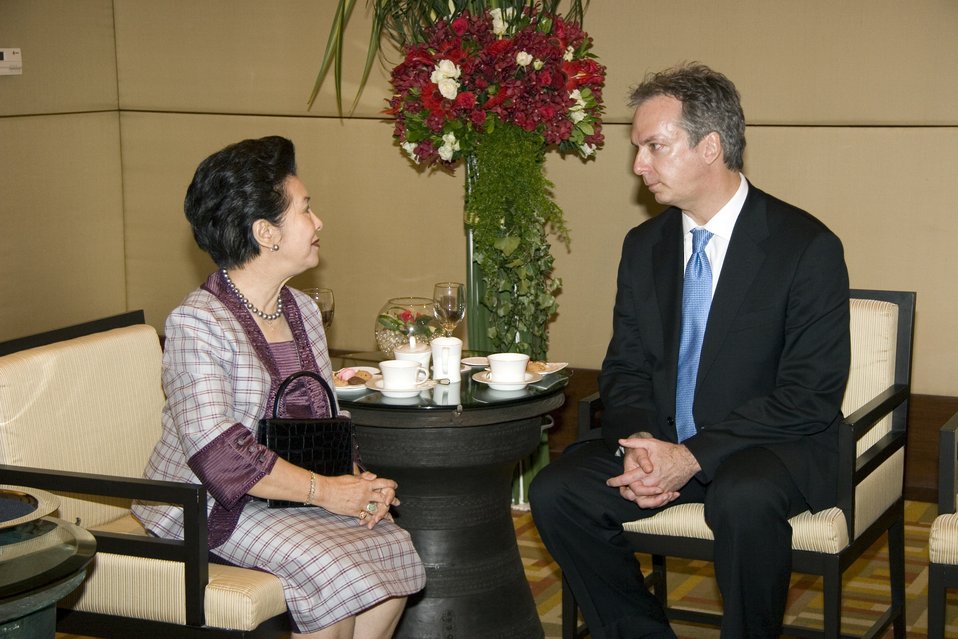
U.S. Ambassador to Thailand Meets With Thai Queen’s Lady-in-Waiting

U.S. Ambassador to Thailand Eric G. John meets with the Queen’s Lady-in-Waiting, Thanpuying Nravadi Chaixanien, at the Conrad Hotel in Bangkok, Thailand July 21, 2009.